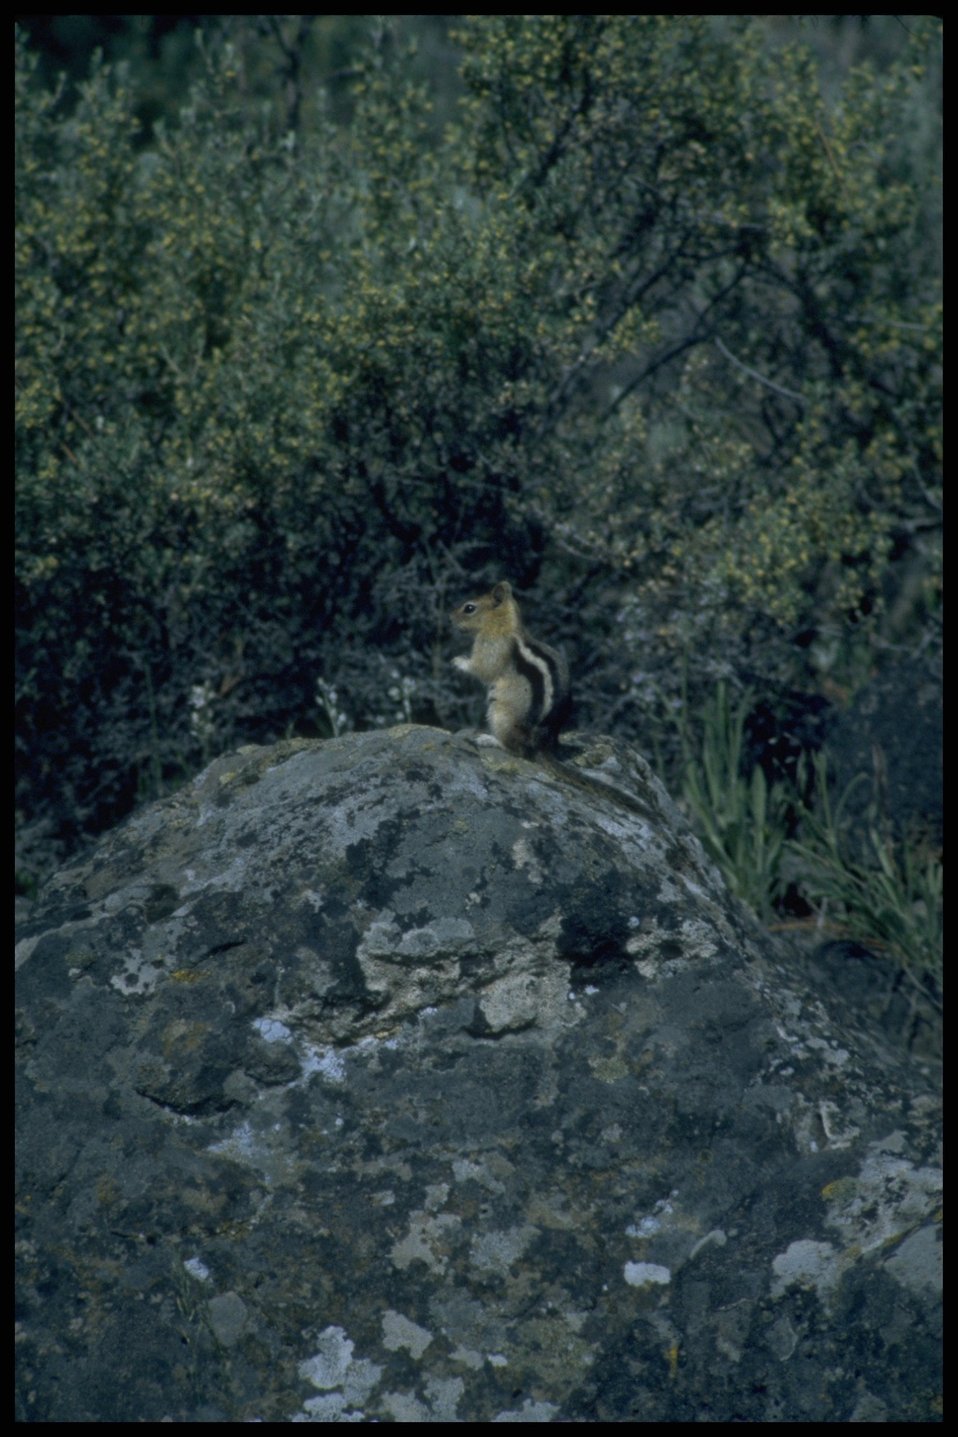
Far shot of chipmunk, Lakeview District.